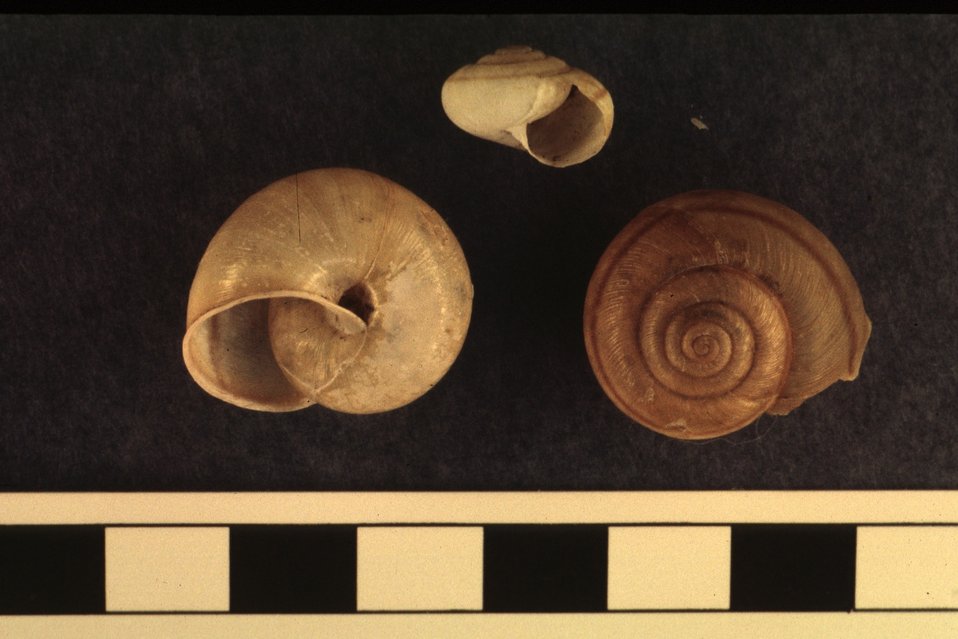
Oregon shoulderband (Helminthoglypta hertleini)